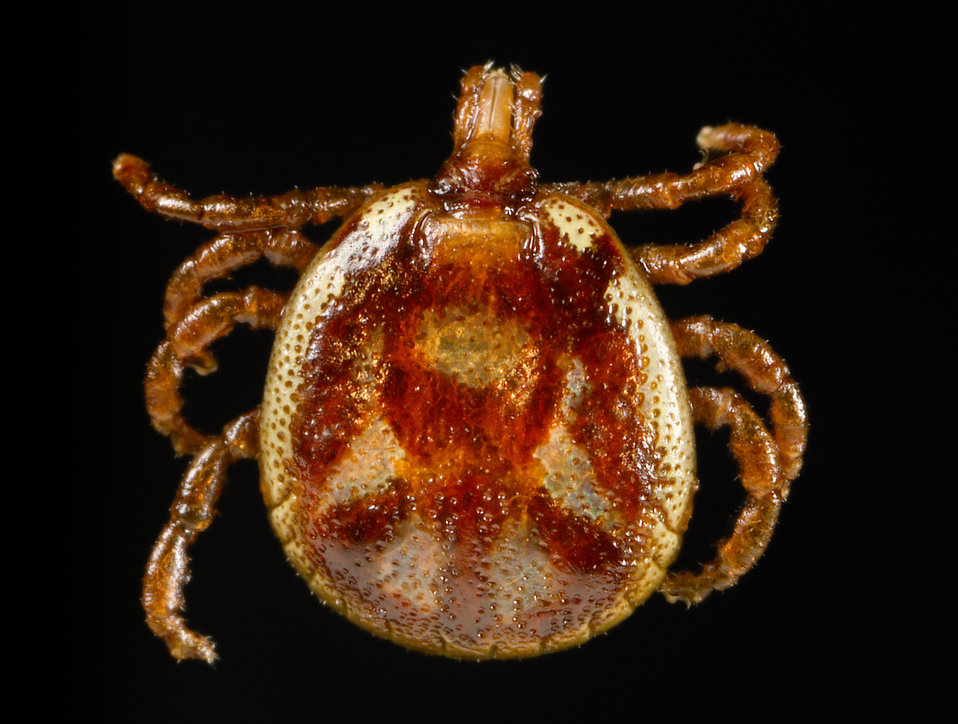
This photograph depicted a dorsal view of a 'monitor lizard tick', Amblyomma exornatum, formerly known as Aponomma exornatum. Native to Africa, this is a reptilian tick, and as the name suggests, is mainly a parasite of monitor lizards. The four pairs of jointed legs, places these ticks in the Phylum Arthropoda, and the Class Arachnida.